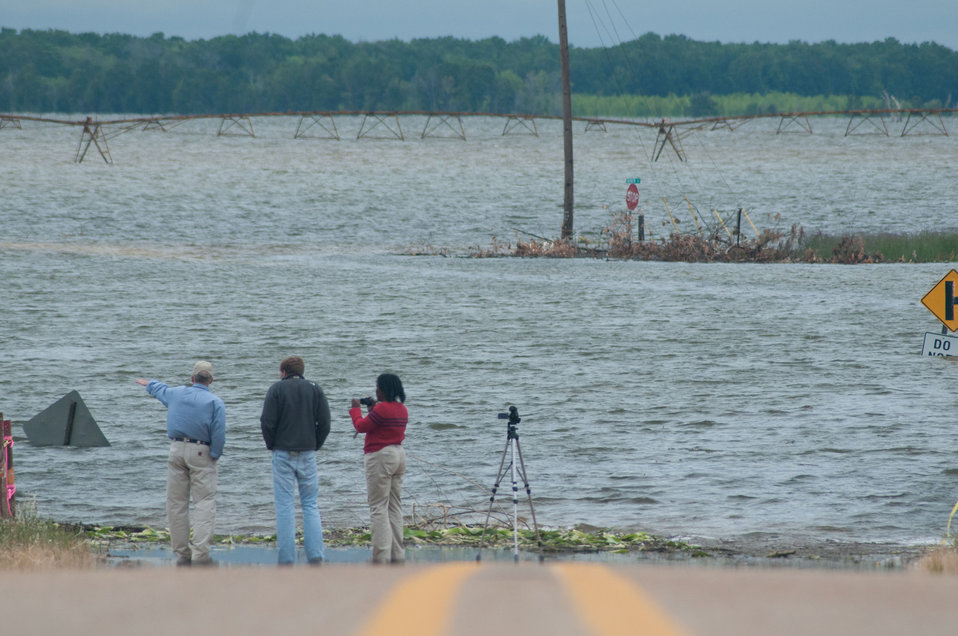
In a cold wind, U.S. Department of Agriculture's Soil Conservation Technician Charles Davis (blue shirt), Media Specialist Laura Anderson and writer Justin Fritscher document the Mississippi River floodwaters that have pushed into the Yazoo River and into these corn and wheat fields in Satartia, MS, on Monday, May 16. 2011. A local community of 96 was evacuated before approximately 4,000 acres were completely flooded. Wave action and decay has freed parts of corn stalks that are washing up along the new shoreline. The water saturated soil does not allow enough oxygen to the plant, by the time the water is expected to recede, the stalks will be dead. Wheat was harvested earlier than scheduled from wet fields and will have to be dried before being used or sold. News media crews come and go throughout the day reporting from this bridge and roadway.